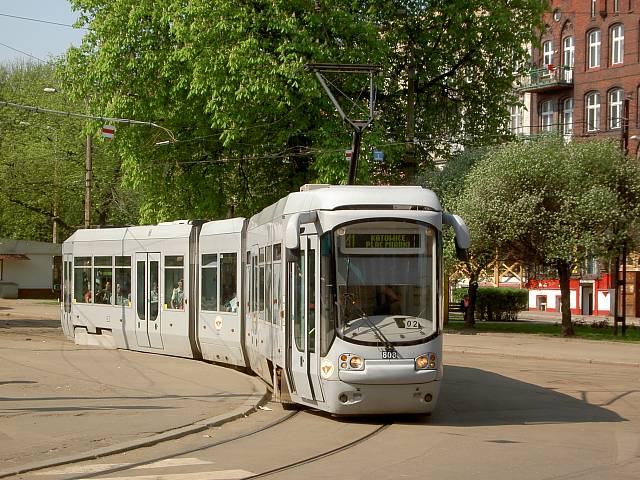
Konstal 116Nd type (aka Citadis 100) car as Route 6 in Bytom.